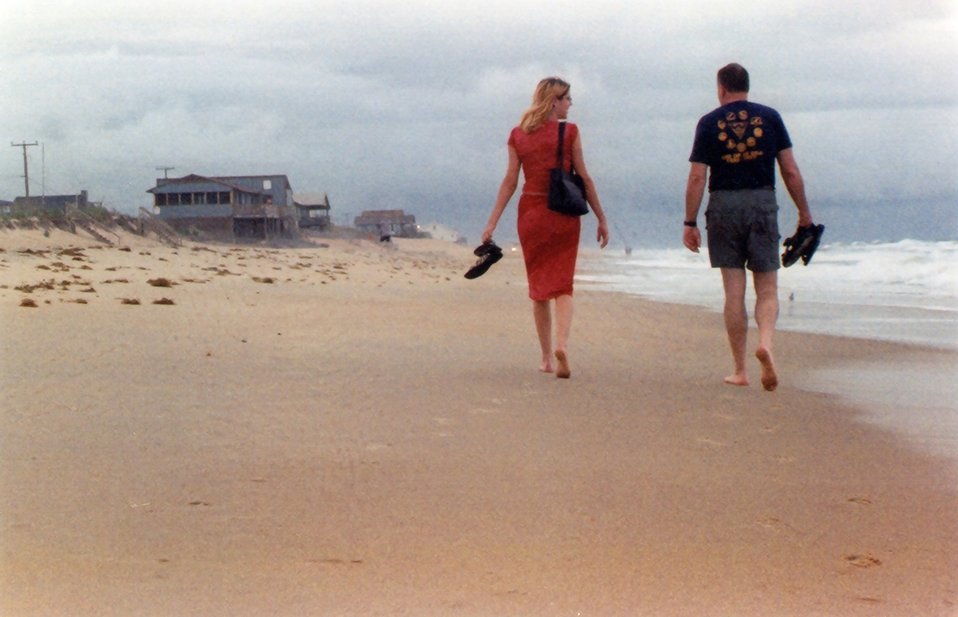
Walking along an endless beach on the Carolina outer banks.